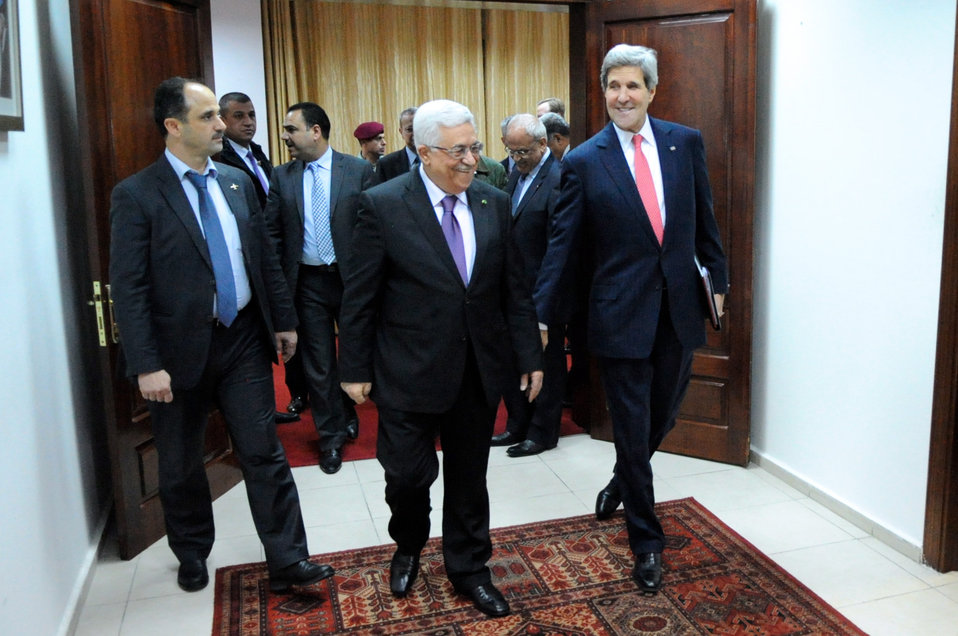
Secretary Kerry Meets With Palestinian Authority President Abbas

Palestinian Authority President Mahmoud Abbas welcomes U.S. Secretary of State John Kerry to his headquarters before a meeting in Ramallah, West Bank, on December 12, 2013.